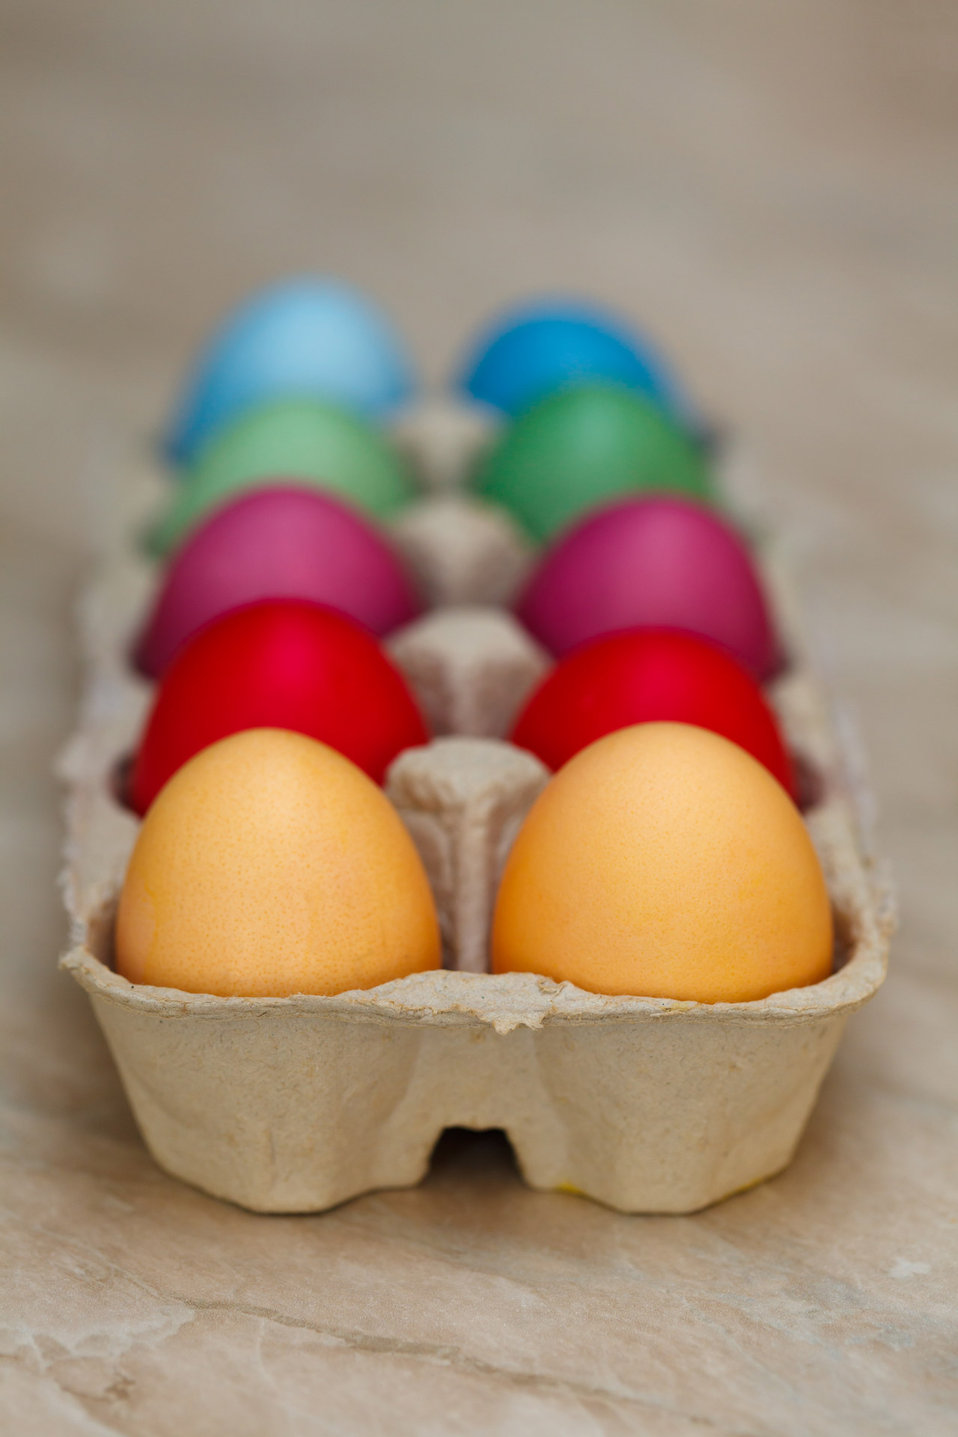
Easter eggs in a carton

Ten colorful easter eggs in a carton.